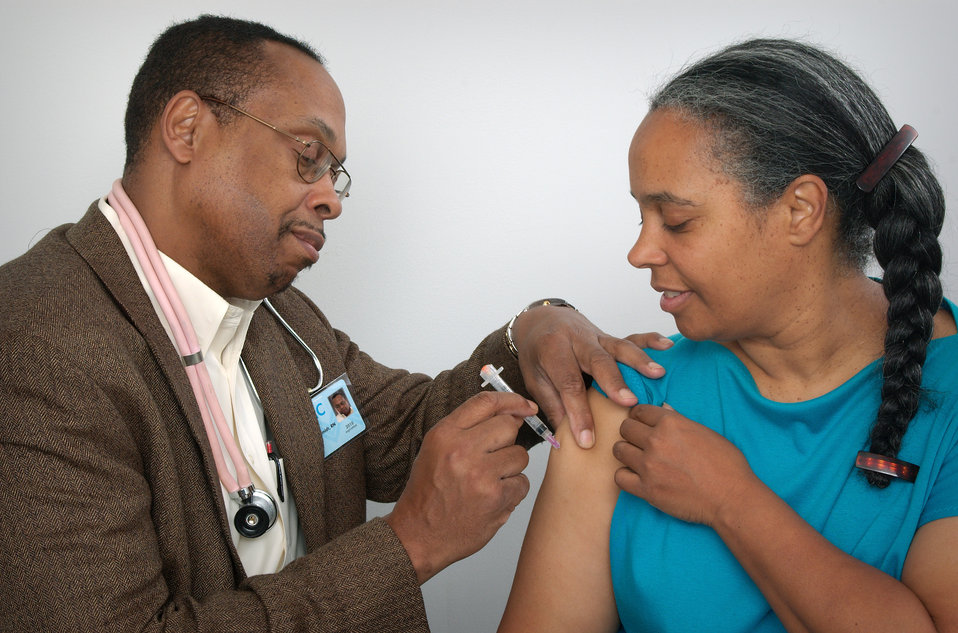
In this image, a qualified healthcare practitioner was in the process of administering an intramuscular immunization to a woman, using the woman's right shoulder muscle as the injection site. The woman was assisting in the procedure by lifting up her blouse sleeve, while the physician immobilized the injection area with his free hand.